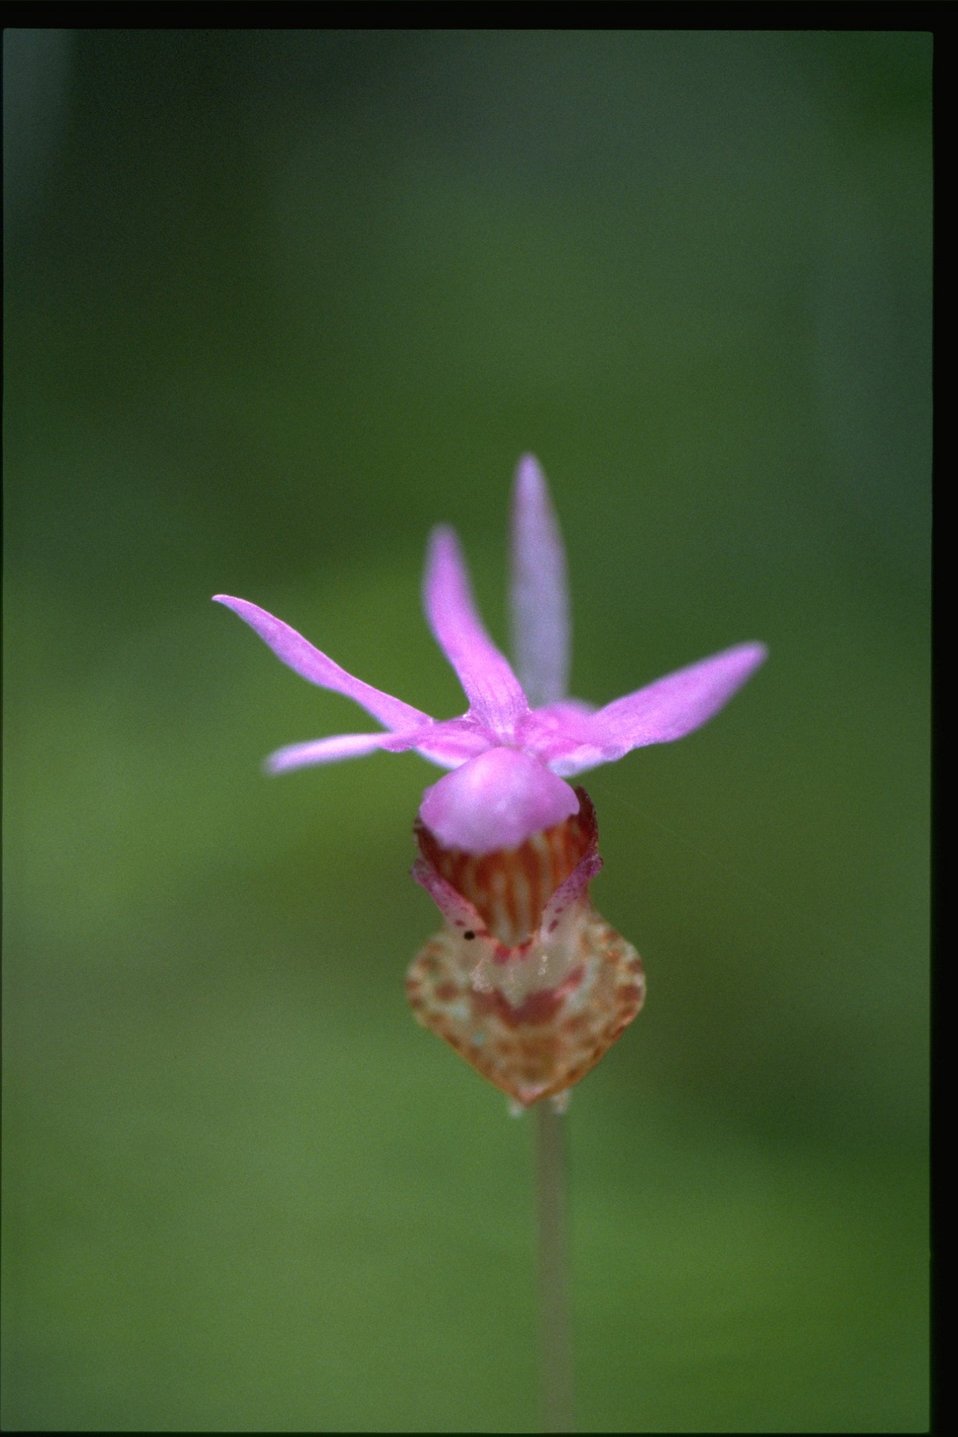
Closeup shot of Calypso bulbosa.